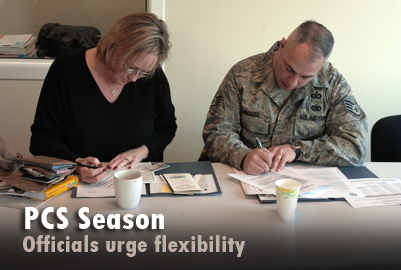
PCS